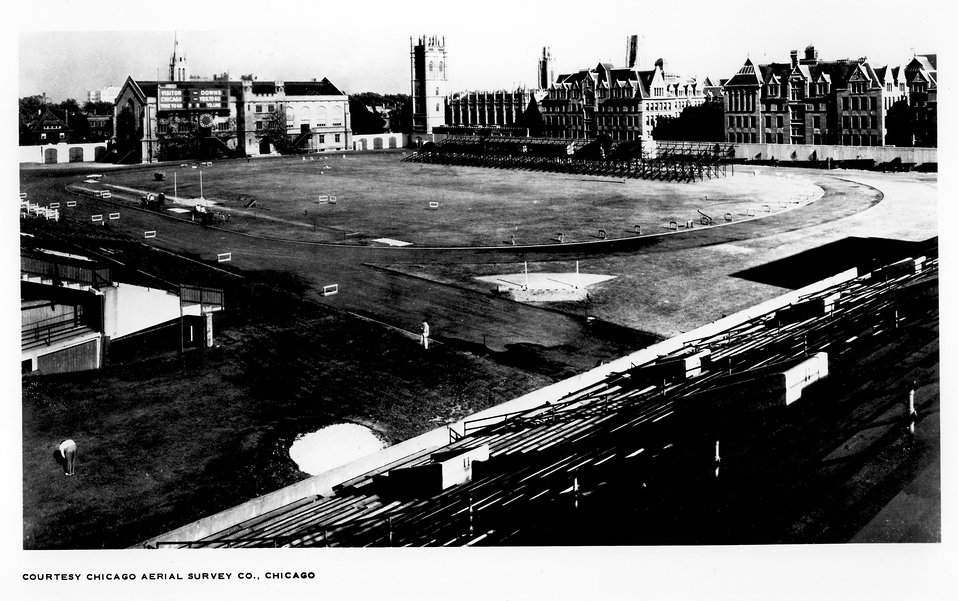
Stagg Field, University of Chicago.